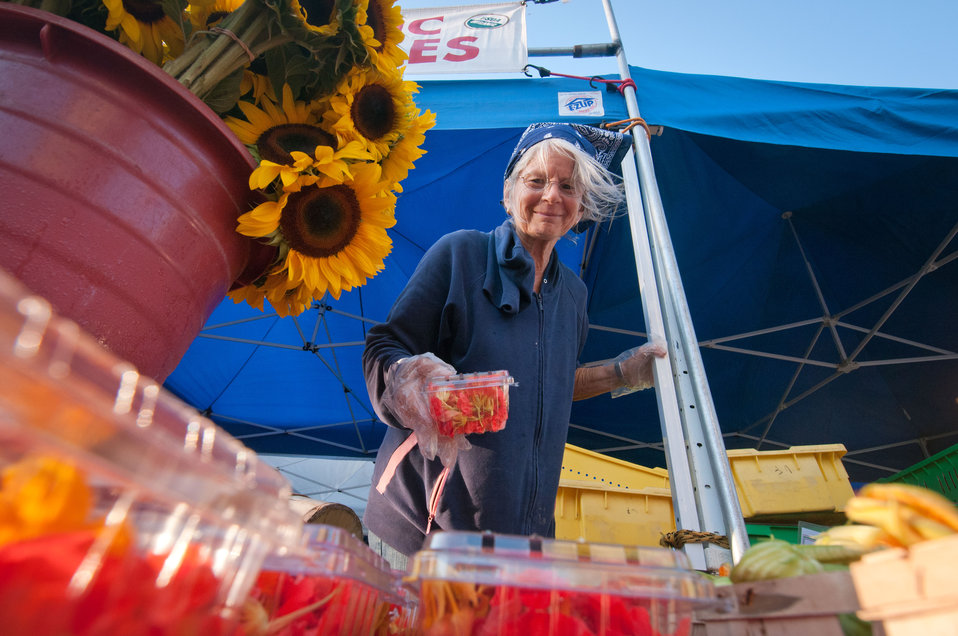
Worden Farm's (www.wordenfarm.com) Anne Hall sets out fresh picked organic sunflowers, nasturtium flowers (pepper flavor) and squash flowers (all decorative and edible) at the Saturday Morning Market, in St. Petersburg, FL on April 14, 2012. Worden Farm is a family farm that provides certified organic produce to Southwest Florida through community supported agriculture (CSA) membership programs and retail sale at several farmer’s (community) markets. Chris Worden, Ph.D. and Eva Worden, Ph.D. founded and operates the farm that employs more than 20 people. Growing certified organic crops in the coastal sandy soil has required them to develop innovative farming techniques. These techniques help the farm as well as help the studies of universities and farm industry. There are several Worden Farm apprenticeships that provide hands-on training in all aspects of the farm, to include direct marketing at the Saturday Morning Market, or other market sites. The farm also holds culinary and gardening workshops, and other interactive educational events. One of their organic certifications is from the U.S. Department of Agriculture (USDA) and they have partnered with the USDA Natural Resources Conservation Service (NRCS) for soil conserving windbreaks and long tunnel structures to nurture seedlings and extend the growing season.